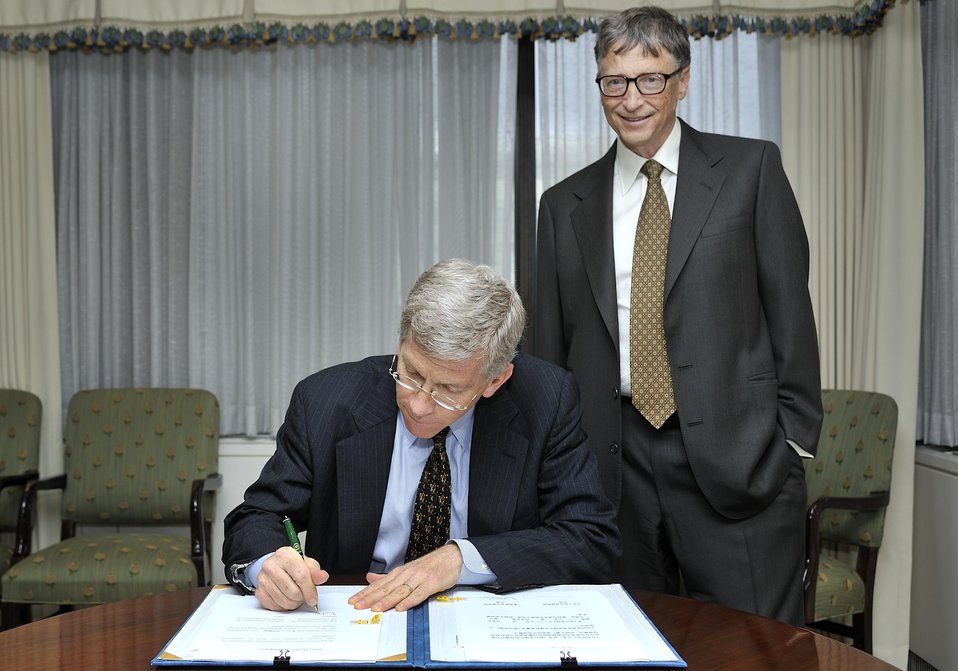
Ken Shipp/DOE Photo